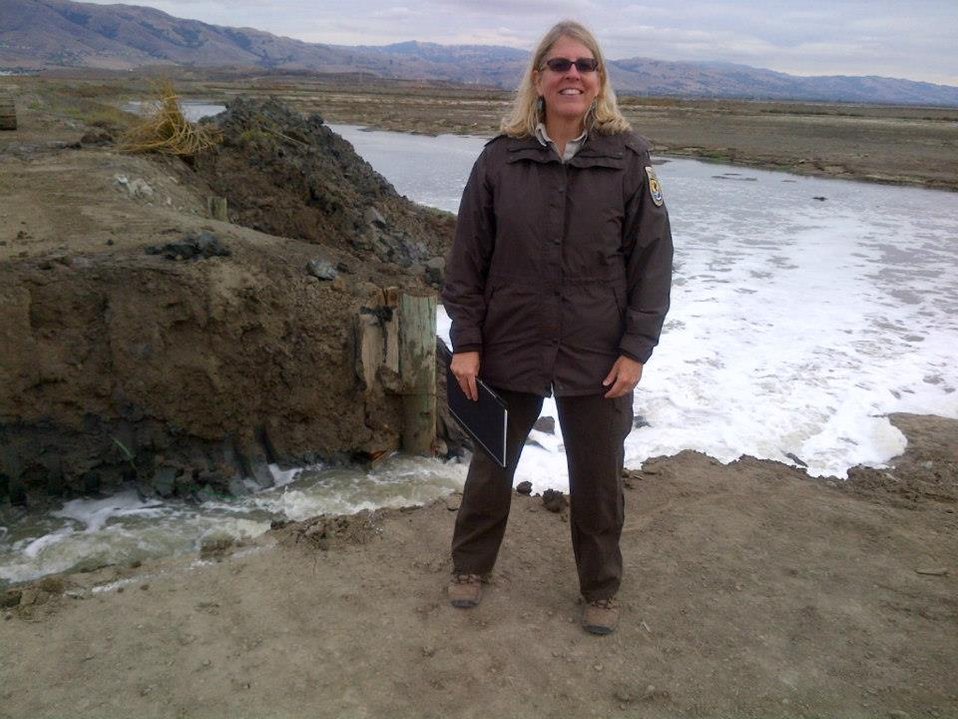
Anne Morkill was selected in 2012 to manage the San Francisco Bay National Wildlife Refuge Complex, covering seven refuges, for the U.S. Fish and Wildlife Service. Previously, she was manager of the Florida Keys National Wildlife Refuge Complex. She stands at a levee breach at Don Edwards San Francisco Bay National Wildlife Refuge. The levee was breached to restore the native tidal marsh habitat and benefit the endangered California clapper rail and salt marsh harvest mouse, as part of the South Bay Salt Pond Restoration Project, the largest wetland restoration project on the West Coast (www.southbayrestoration.org/).